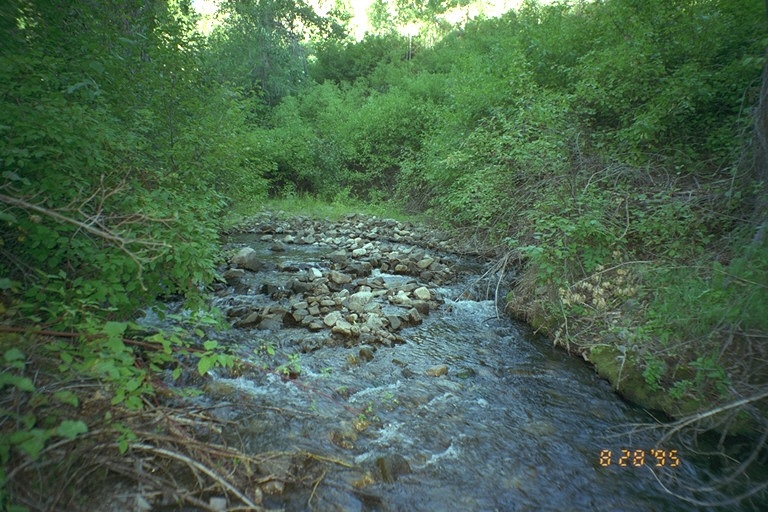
Riparian area Public Lands Salmon Field Office UCSC Upper Columbia Salmon Clearwater District